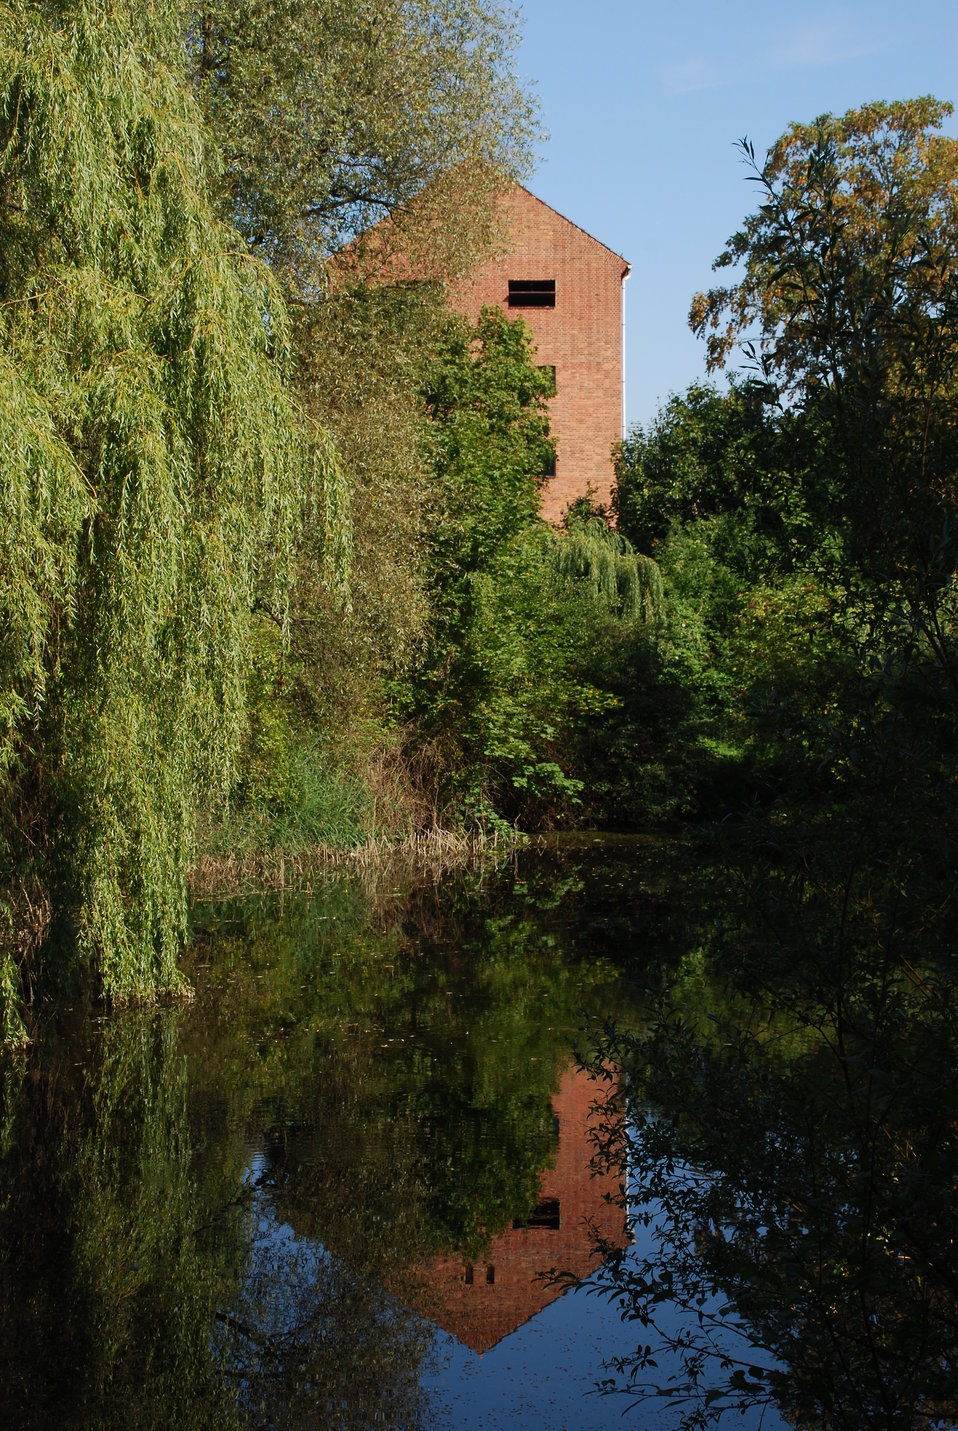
Theaterteich in Frankfurt (Oder), am ehemaligen Kleist-Theater, Friedrich-Ebert-Straße